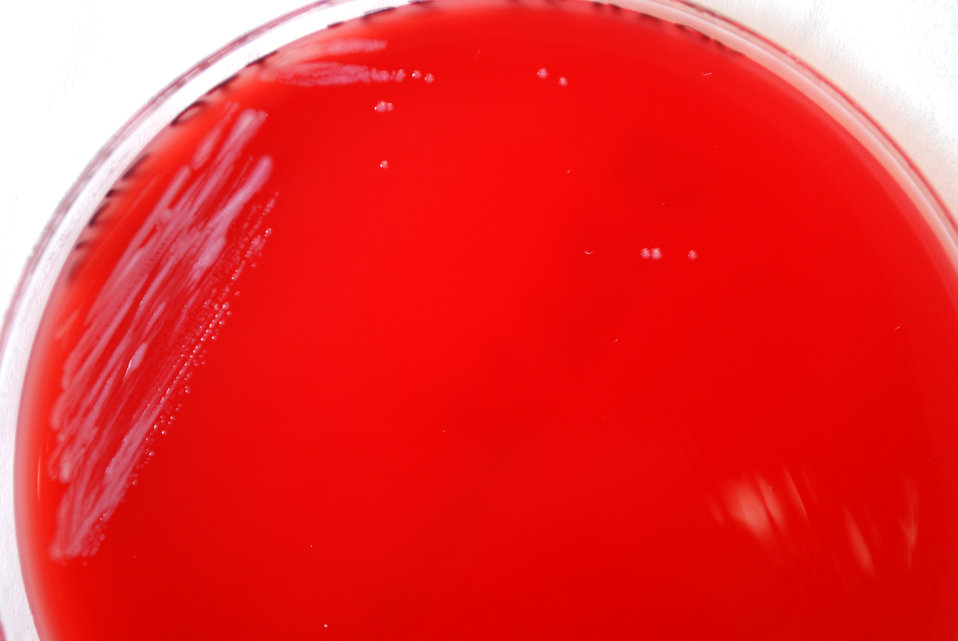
As a closer view of PHIL 12222, this photograph depicts the colonial morphology displayed by Gram-negative Yersinia pestis bacteria, which was grown on a medium of sheep's blood agar (SBA), for a 48 hour time period, at a temperature of 25�C.